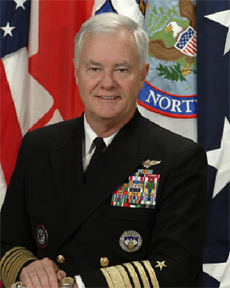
Keating

Navy Adm. Timothy Keating, commander, North American Aerospace Defense Command